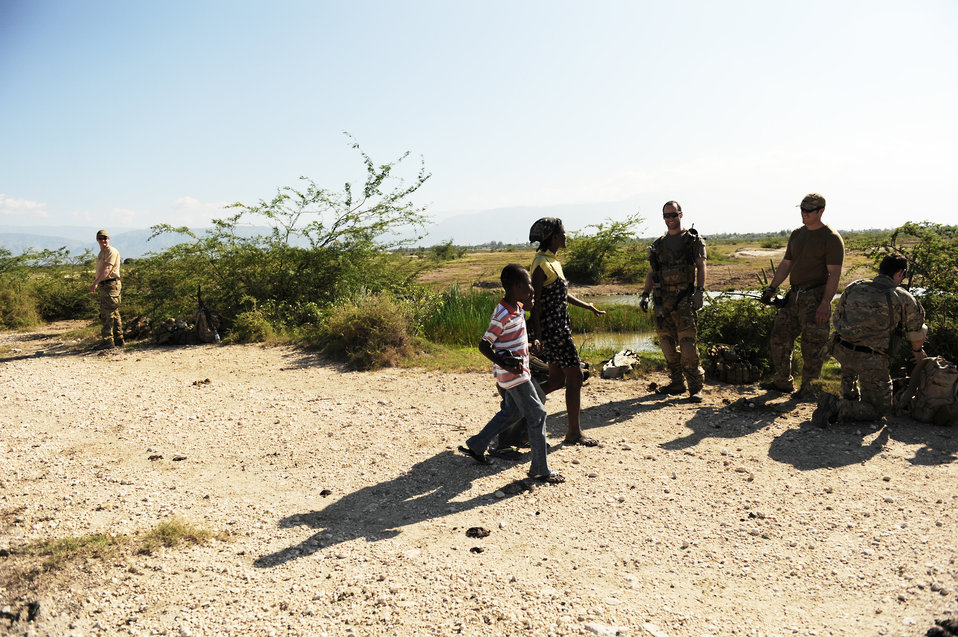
Haiti Earthquake Relief

Air Force combat controllers talk to passing Haitians prior to humanitarian aid being air dropped into Port-au-Prince, Haiti, Jan 18, 2010. Department of Defense assets have been deployed to assist in the Haiti relief effort following a magnitude 7 earthquake that hit the city on Jan. 12, 2010. The combat controllers are assigned to the 23rd Special Tactics Squadron at Hurlburt Field Fla.